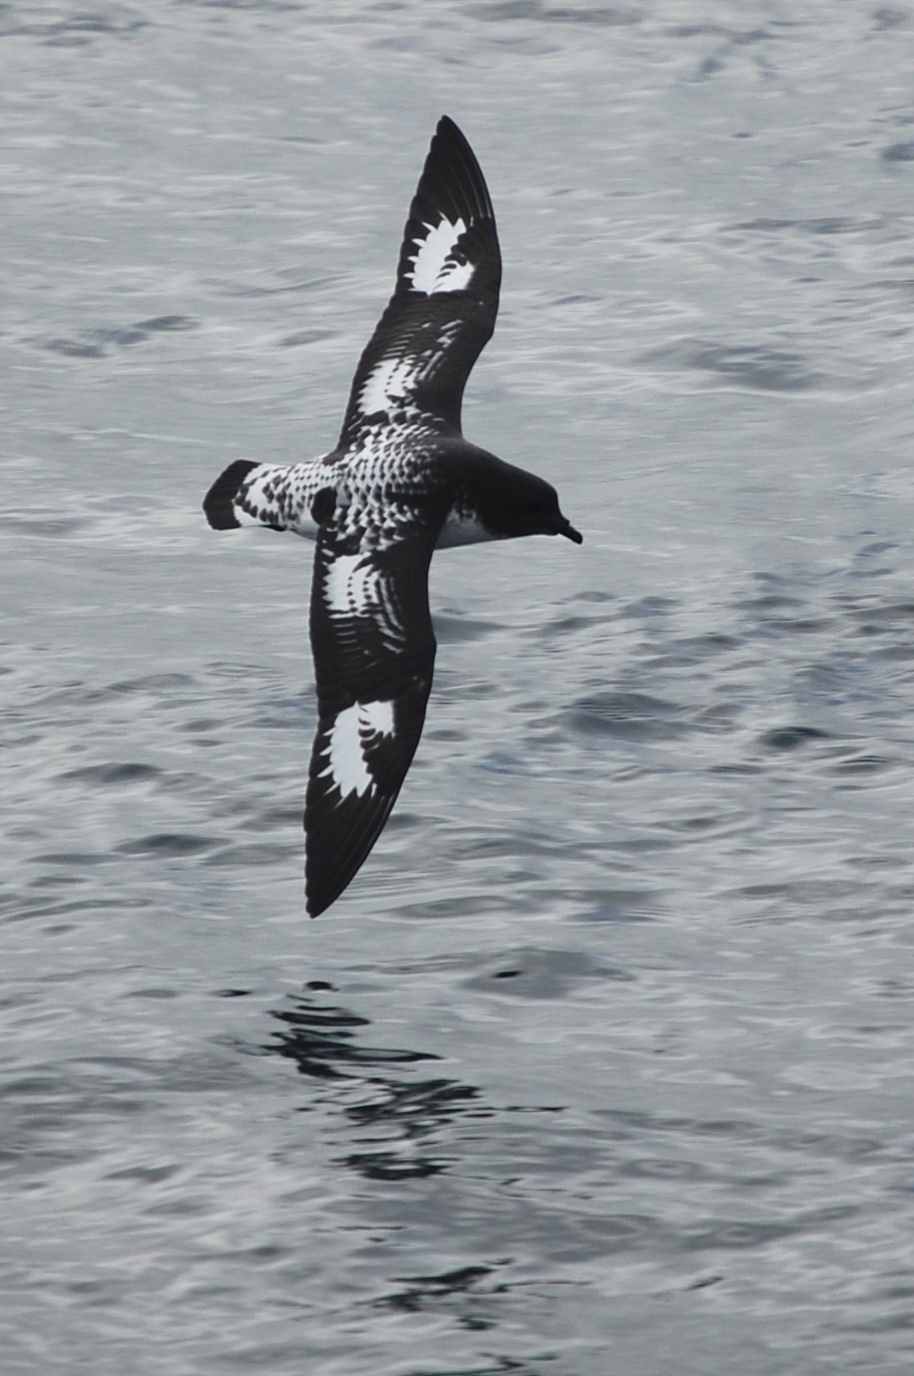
Cape petrel.